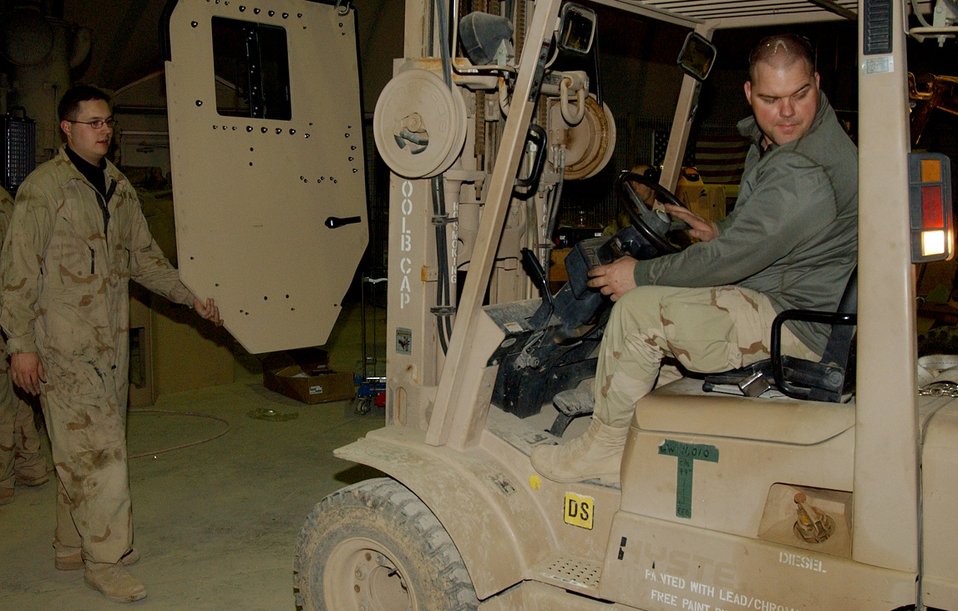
Airmen add armor to Army vehicles

BALAD AIR BASE, Iraq -- Senior Airman Matthew Brock steadies an armored door as Tech. Sgt. Robert Riley moves it to an awaiting vehicle. Airman Brock is a 732nd Expeditionary Logistics Readiness Squadron vehicle maintainer deployed from Royal Air Force Fairfield, England, and Sergeant Riley is a 732nd ELRS vehicle maintainer deployed from Misawa Air Base, Japan.